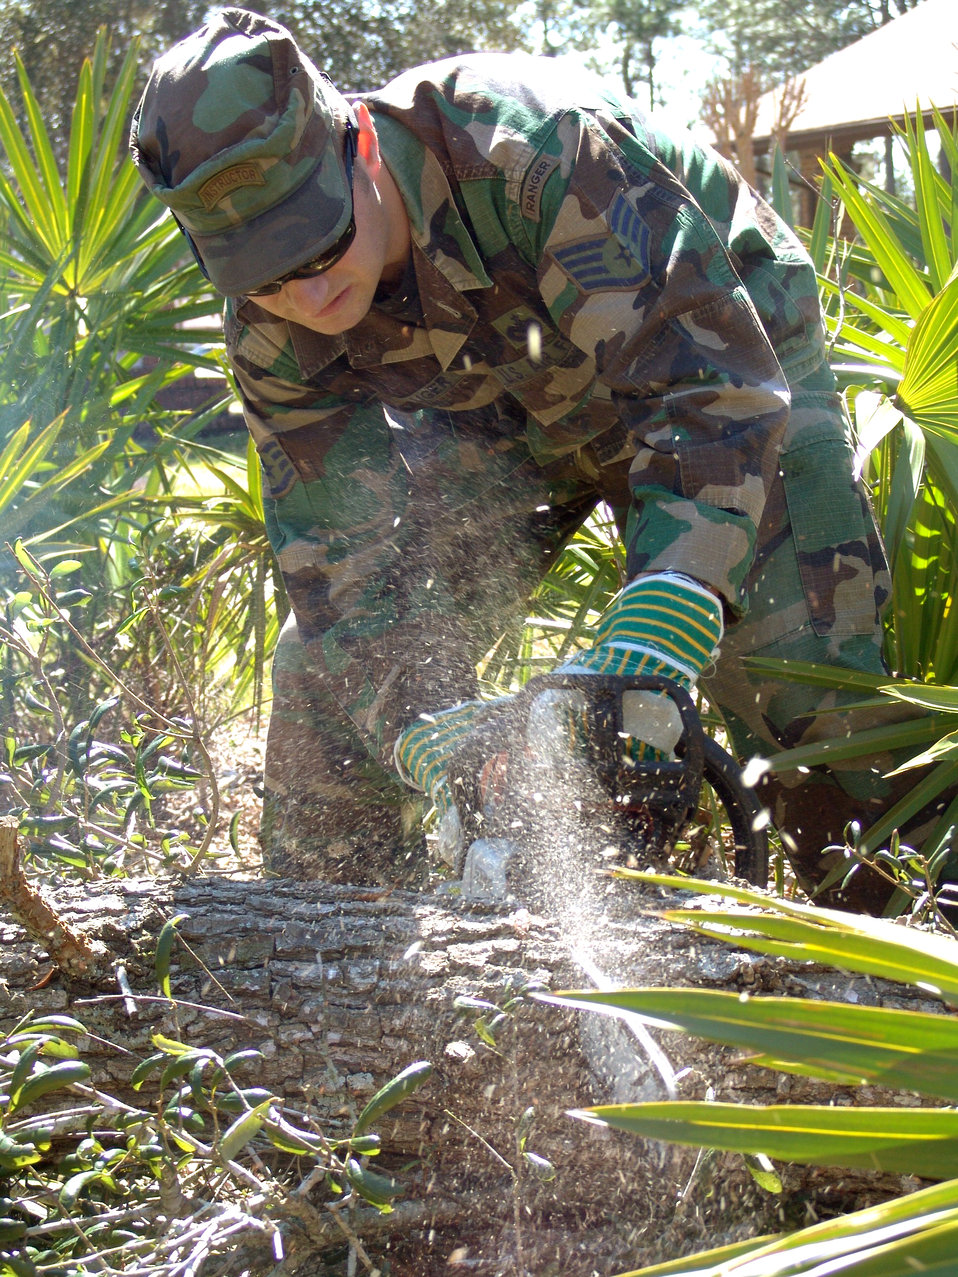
Eglin Airmen go to war with stumps, trees

SHALIMAR, Fla. -- Staff Sgt. Jamie Auger cuts fallen tree limbs into smaller pieces with a chain saw at Bob Hope Village here recently. He and other instructors with the 96th Ground Combat Training Squadron at nearby Eglin Air Force Base cut up fallen trees and pulled 18 stumps, saving the village more than $2,000. Hurricane Ivan downed hundreds of trees on the property and caused more than $300,000 in damage.